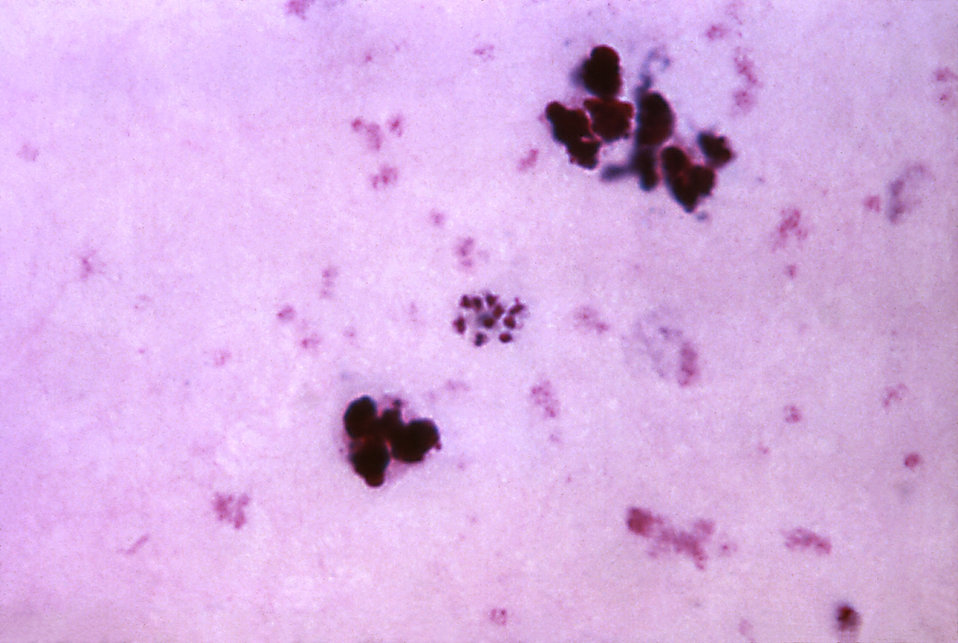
This blood smear photomicrograph depicts a mature Plasmodium malariae schizont.